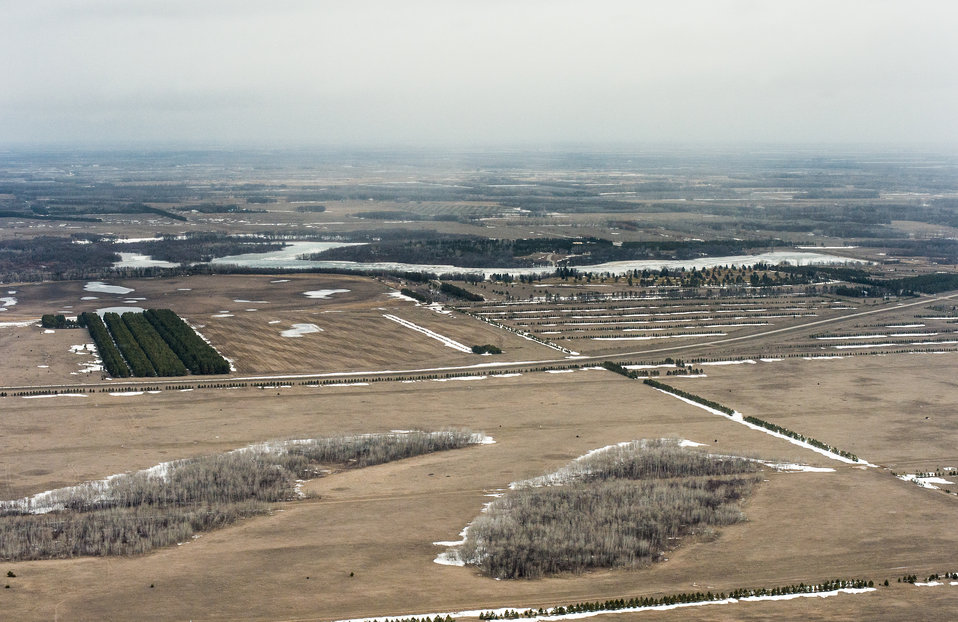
Flood pools for Renwick and Morris Dam, in Pembina County, ND, part of the Red River basin, on Wednesday, May 1, 2013. For information about this and other programs from the USDA Red River Basin Initiative (RRBI) please see www.mn.nrcs.usda.gov/news/features13/RRBI.html.